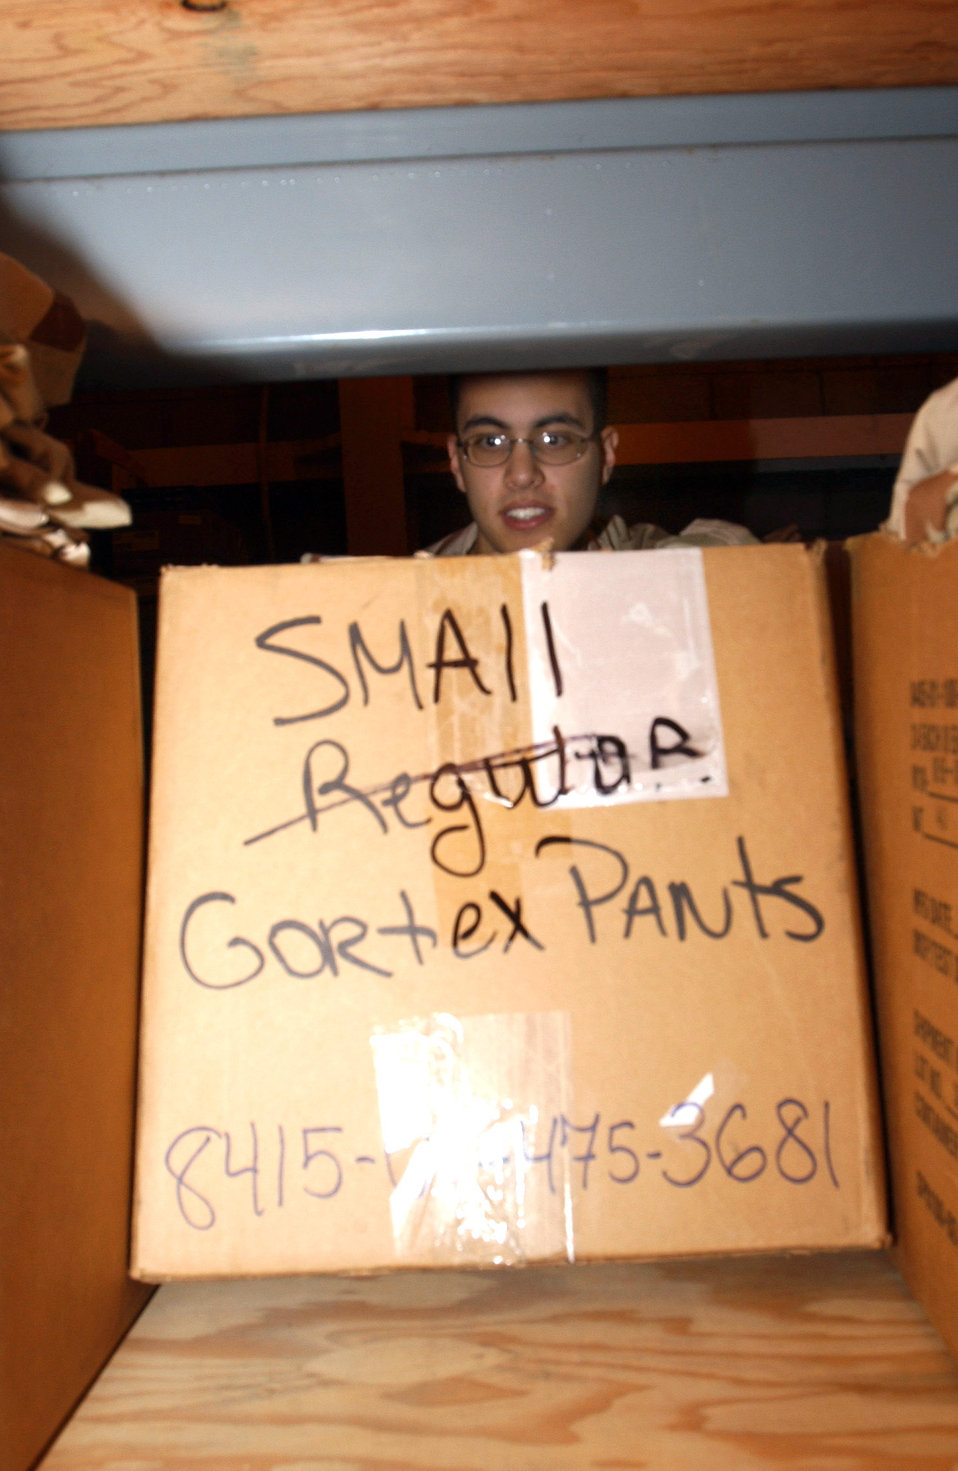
Airmen keep base supplied

OPERATION ENDURING FREEDOM -- Senior Airman Christopher Morales organizes supplies on the shelves in a warehouse at this forward-deployed location. He is assigned to the 40th Expeditionary Logistics Readiness Flight and is deployed from Minot Air Force Base, N.D.